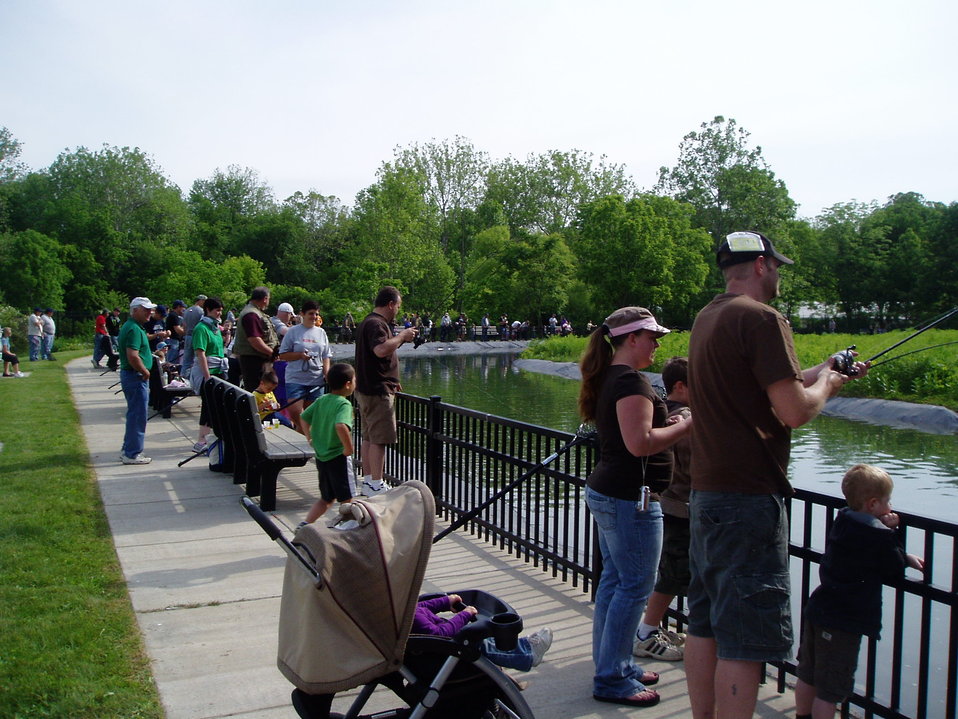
Northeast Fishery Center's Annual Fishing Event

Families fishing at the Northeast Fishery Center's annual fishing event in Lamar, PA.